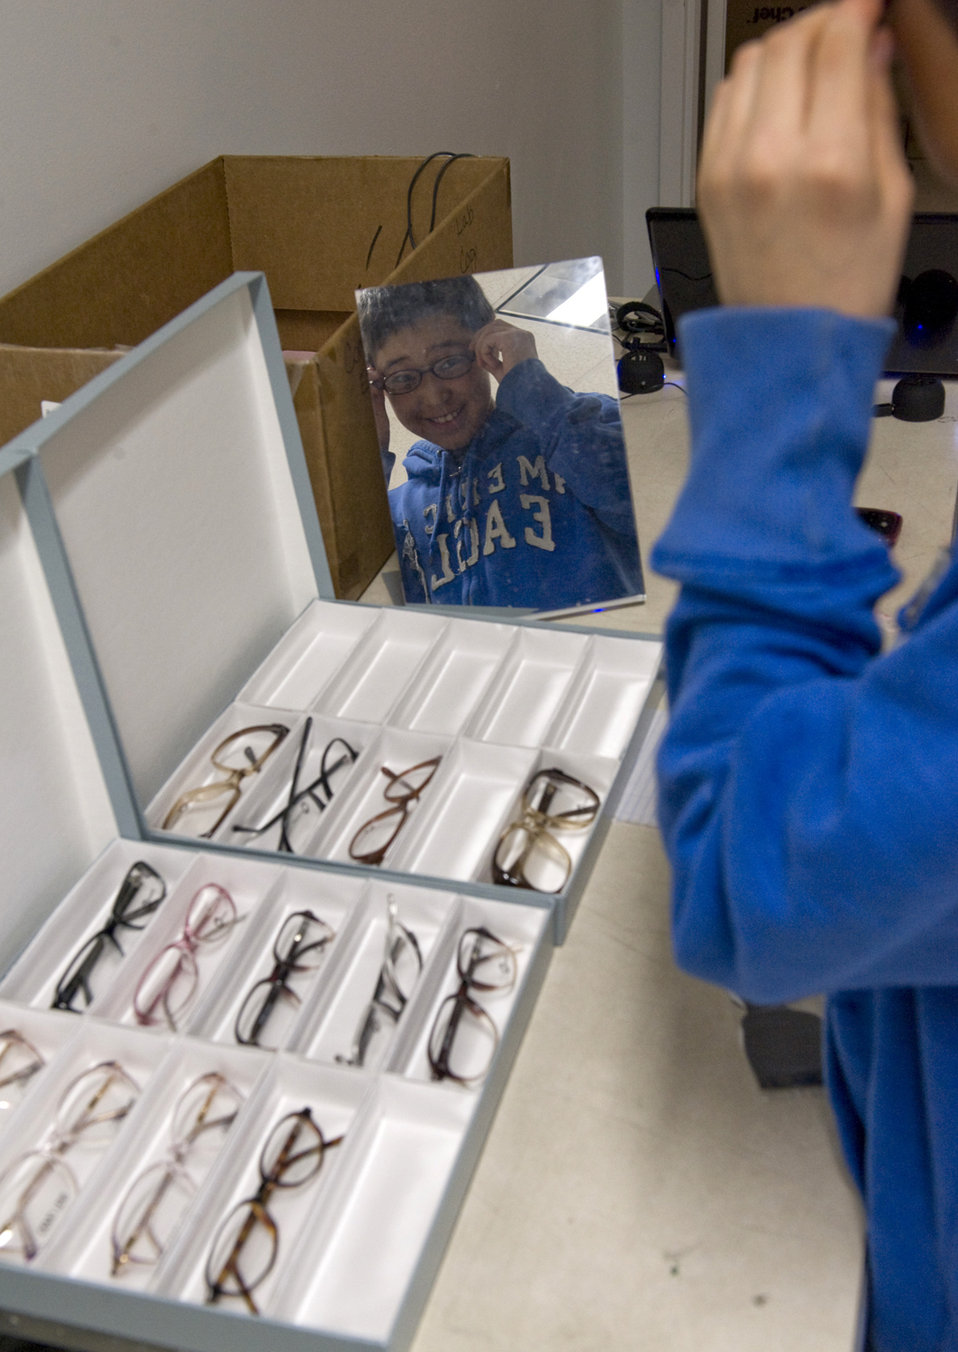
New Vision

Frank Norton, 10-years-old, tries on eye-glass frames after receiving an eye exam during Operation Arctic Care April 12, 2010, in Kotzebue, Alaska.